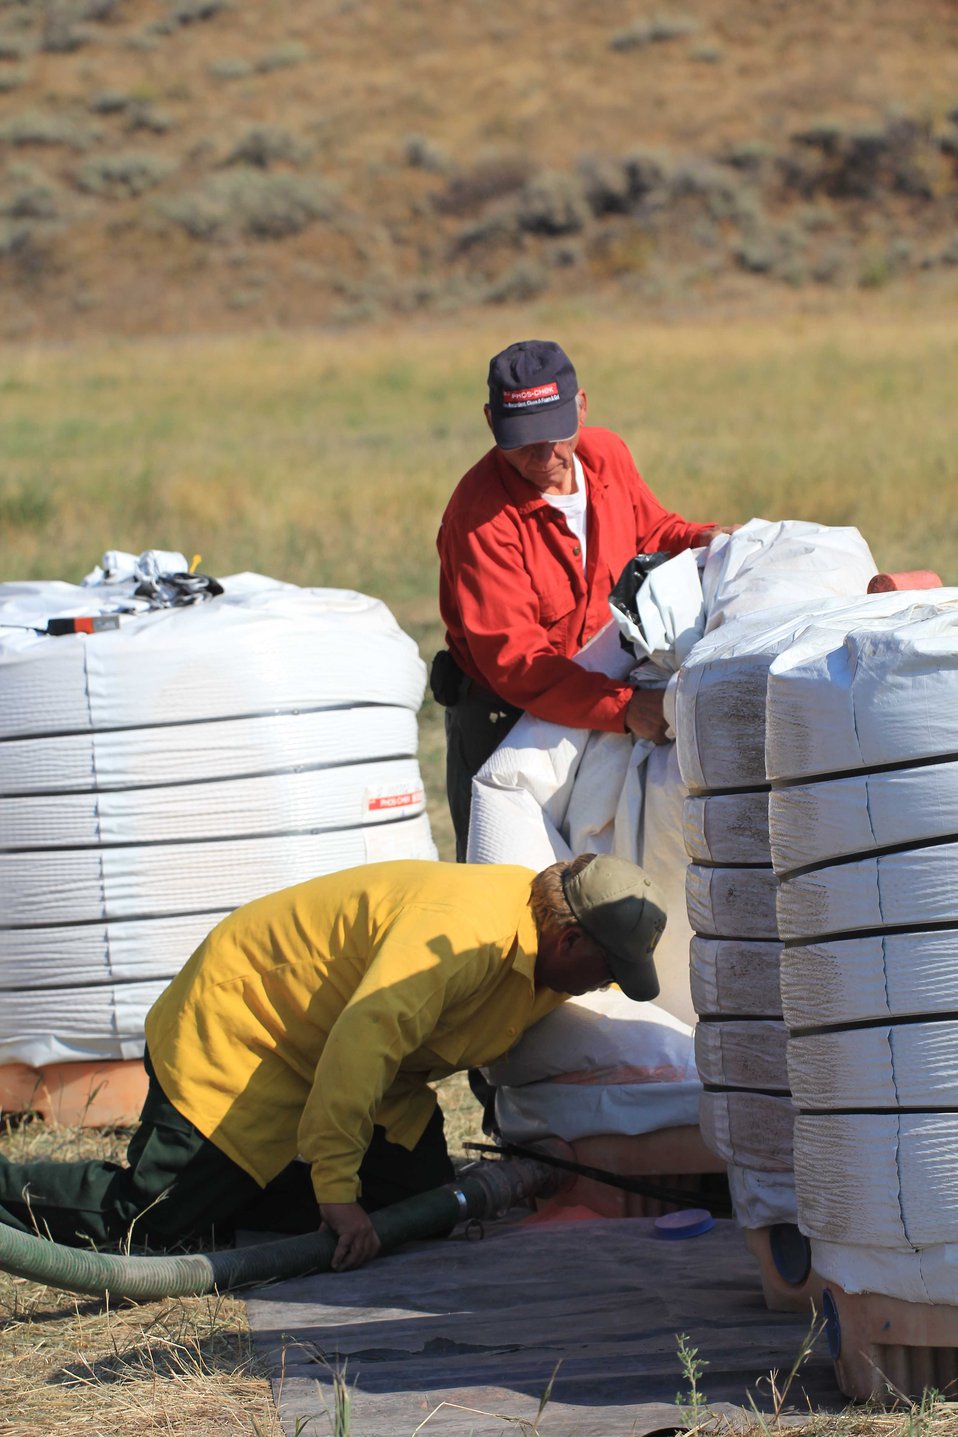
Retardant Powder

Retardant, which comes in powder form, is drawn through a hose to the mixing plant where it is combined with water to make the liquid slurry.

Credit: USFWS / Tony Hough, National Elk Refuge volunteer